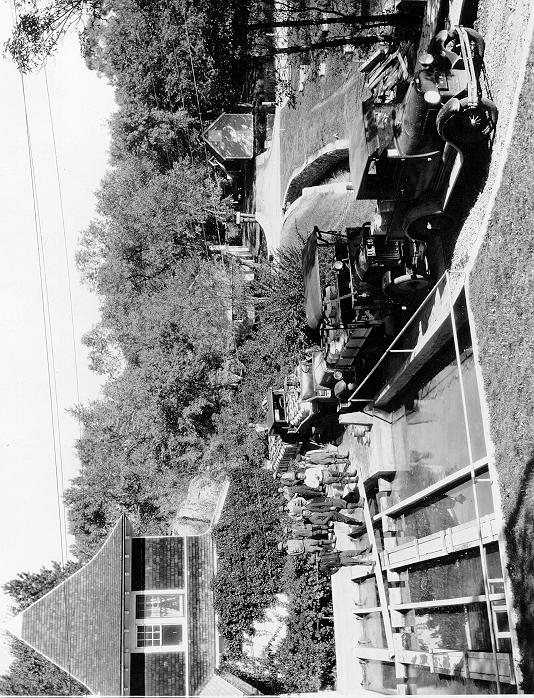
Loading fish in front of hatchery building

Loading fish for transport at D.C. Booth National Fish Hatchery in South Dakota.